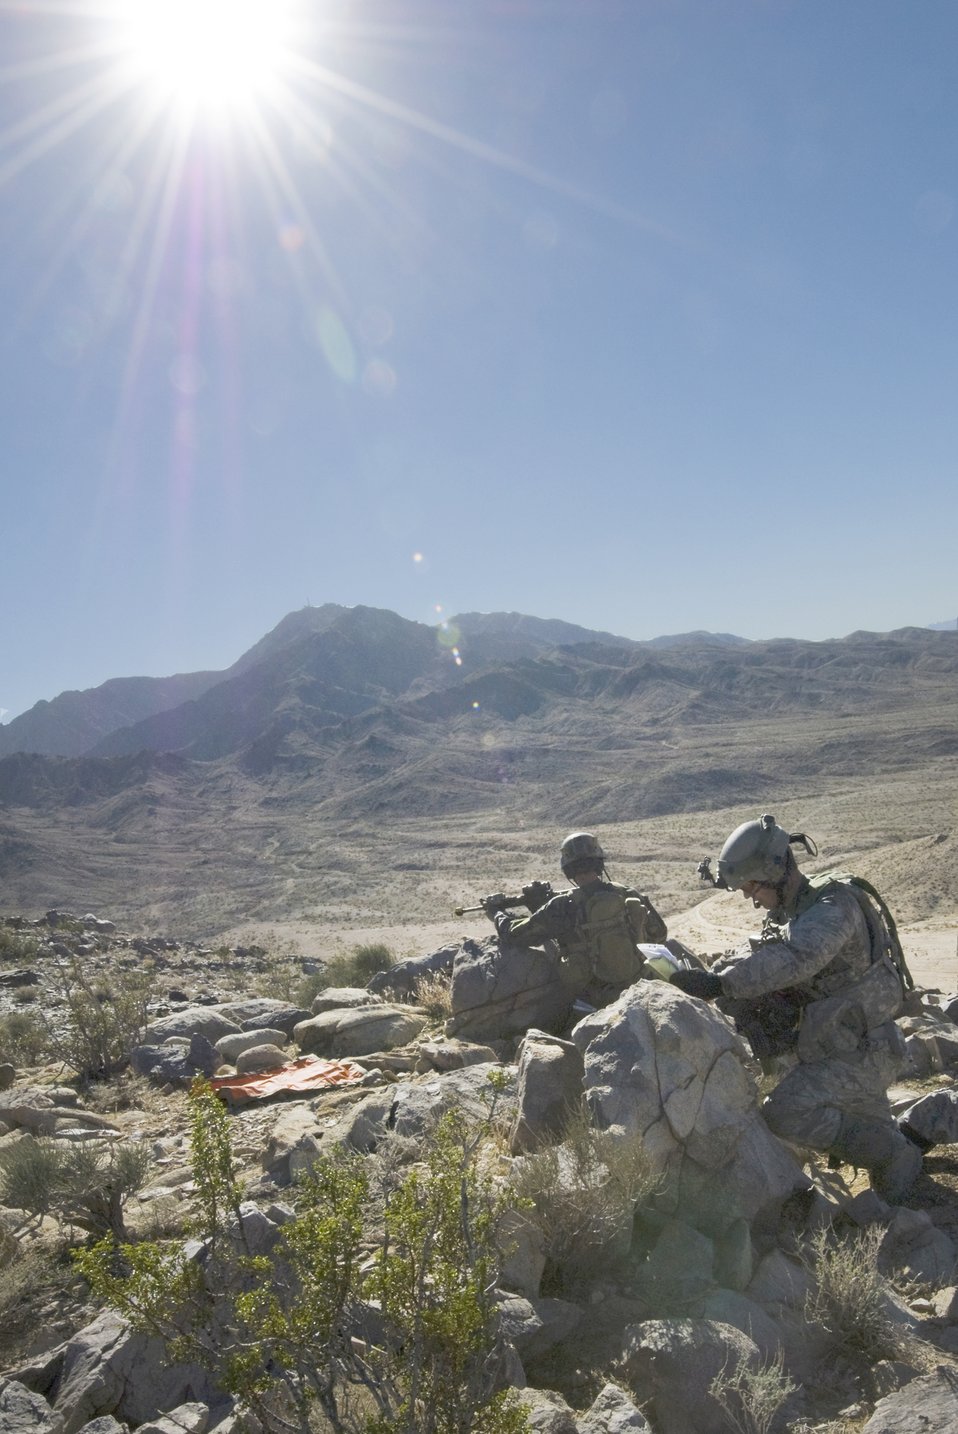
Combat training scenario

Master Sgt. Steven Blouin and Staff Sgt. Nathaniel Vanecko participate in a tactical mission scenario Nov. 1, 2010, at the training range on Fort Irwin, Calif.. Both sergeants are with the 12th Combat Training Squadron Tactical Air Control Party.